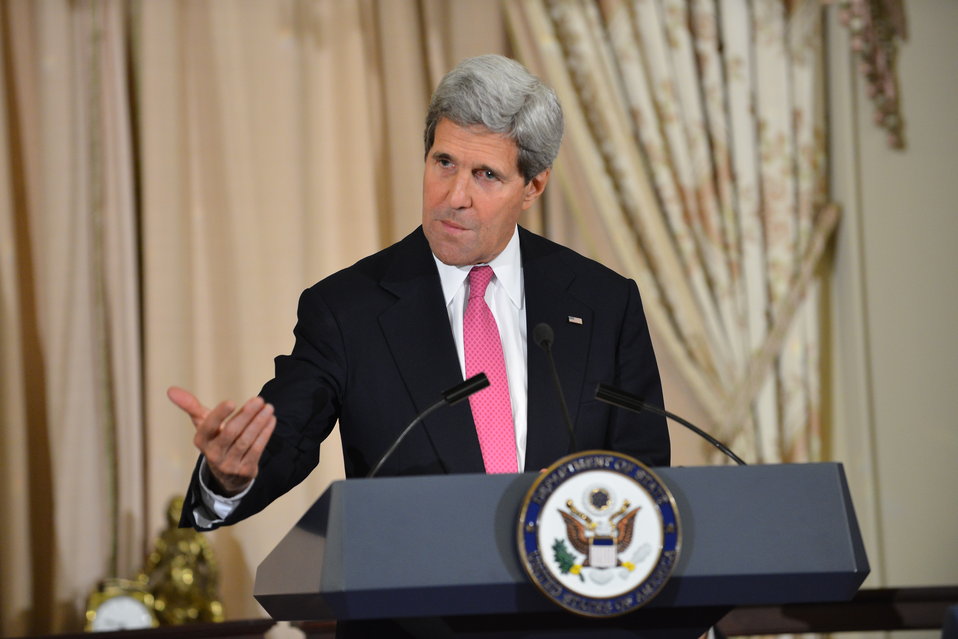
Secretary Kerry Delivers Remarks at the GLIFAA Pride Event

U.S. Secretary of State John Kerry delivers remarks at the GLIFAA Pride Event at the U.S. Department of State in Washington, DC on June 19, 2014.